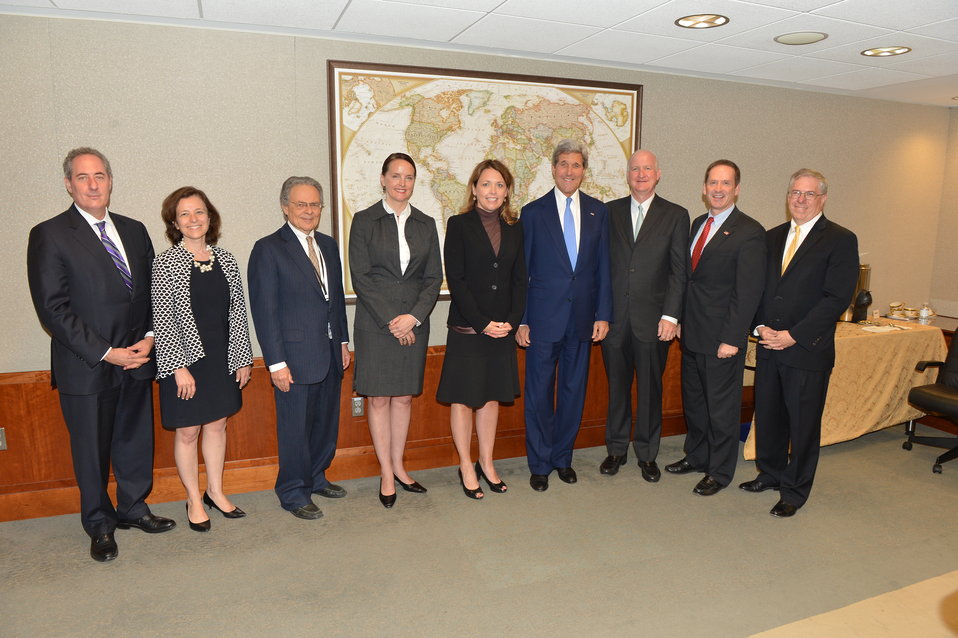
Secretary Kerry Poses for a Photo With the Millennium Challenge Corporation Board Members

U.S. Secretary of State John Kerry poses for a photo with the Millennium Challenge Corporation Board Members at the U.S. Department of State in Washington, D.C. on June 18, 2014.